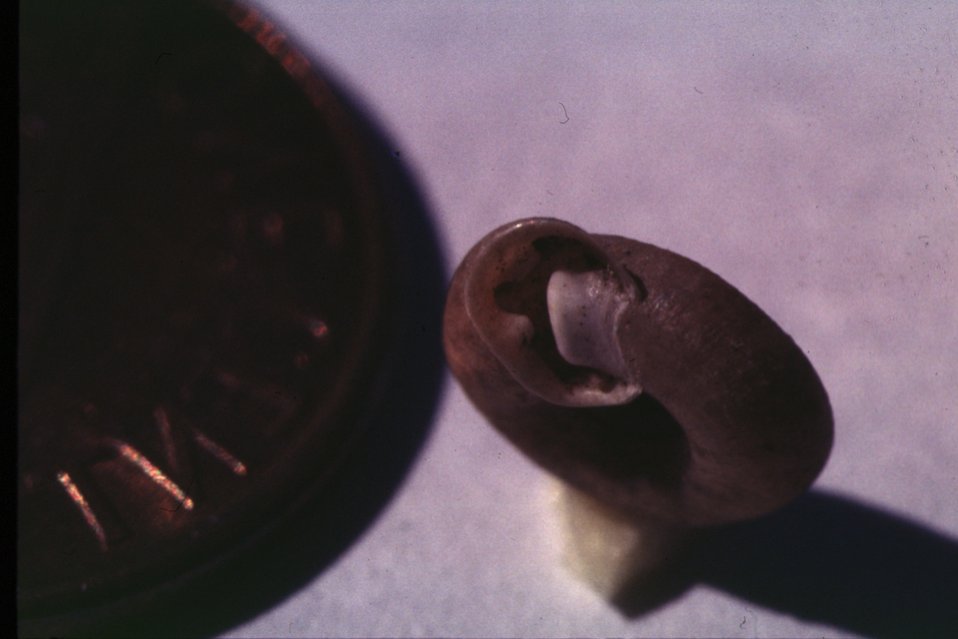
Tehama Chaparral (Trilobopsis tehemana)